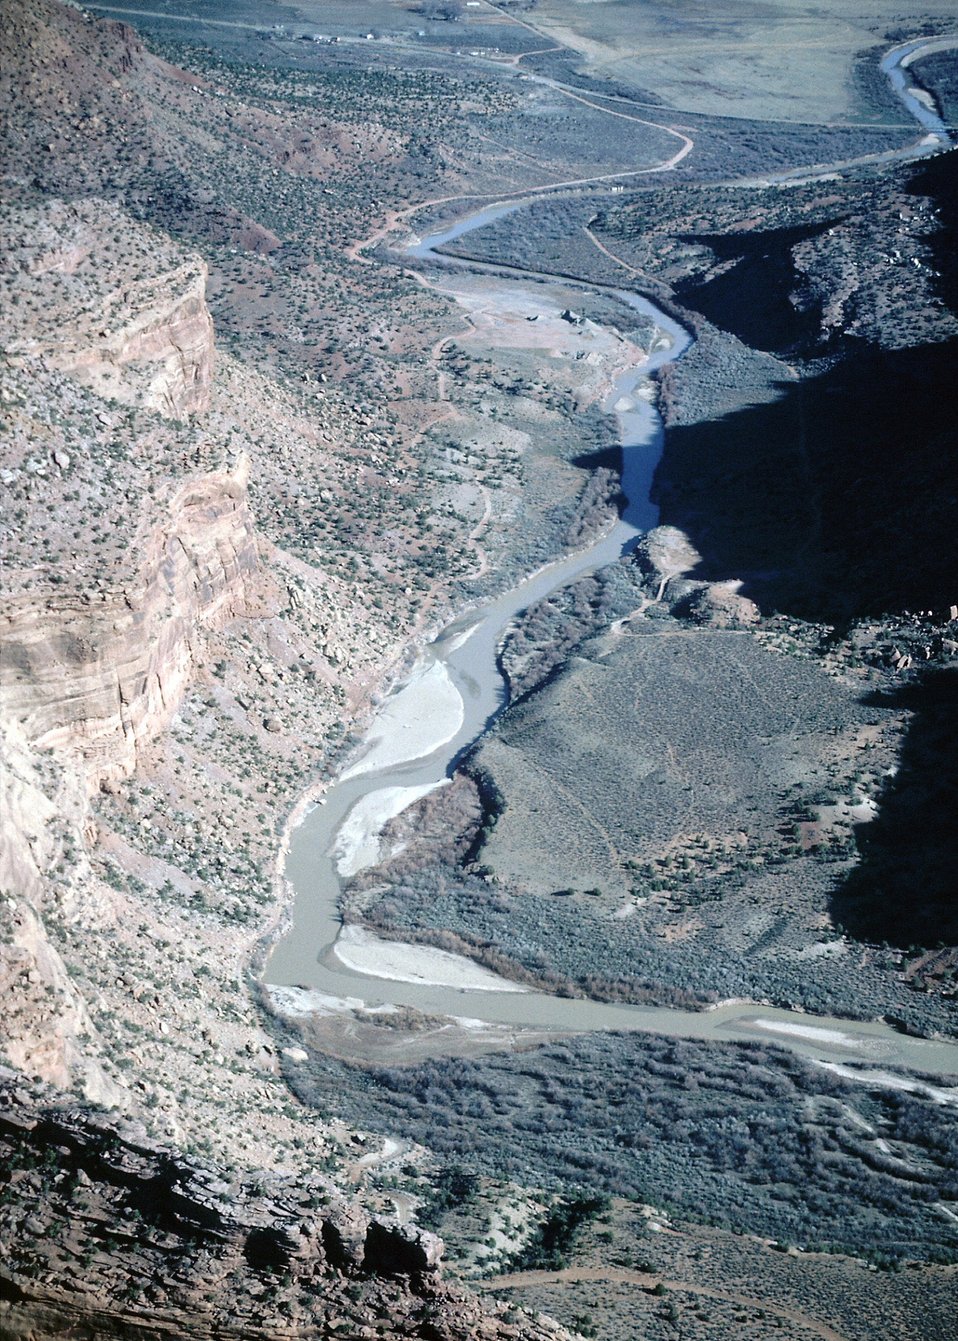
Dolores River